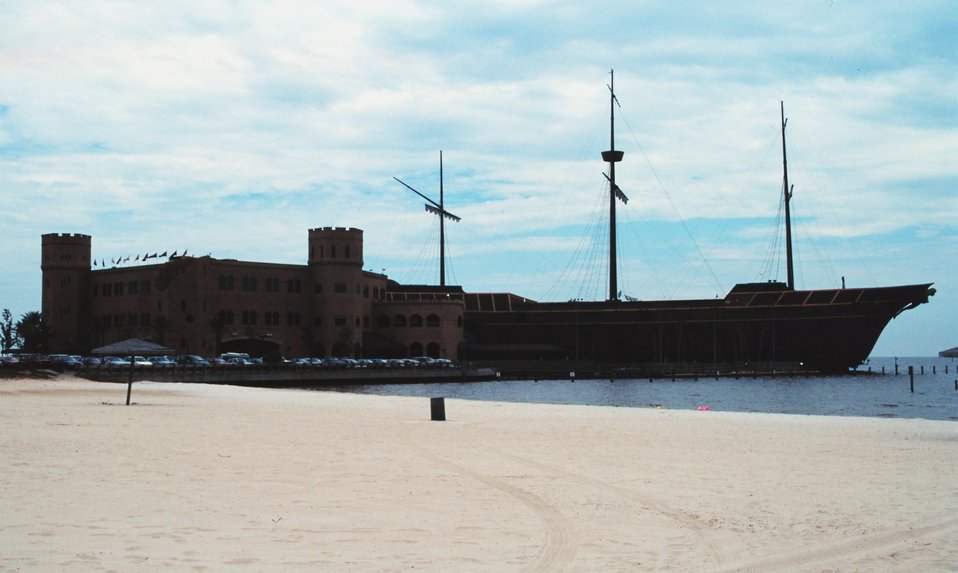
Gambling casinos have been built along the beach at Biloxi